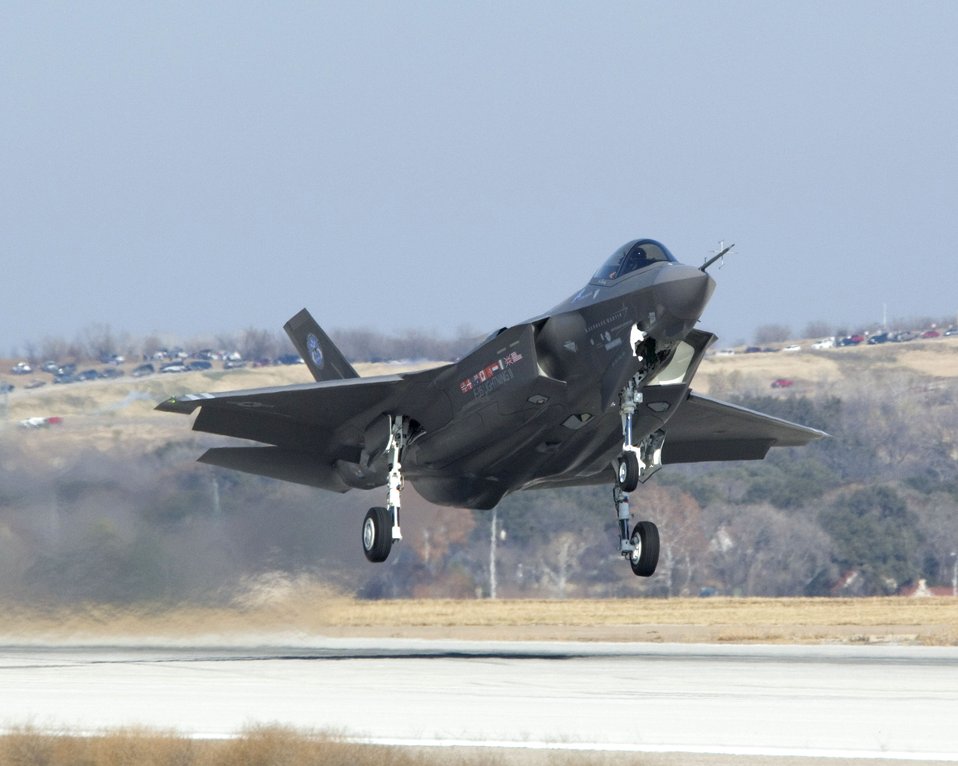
F-35 Lightling II Joint Strike Fighter initial flight

An F-35 Lightning II Joint Strike Fighter takes off at 12:44 p.m. CST at Lockheed Martin in Fort Worth, Texas Dec. 15 for an initial flight as part of system development testing.